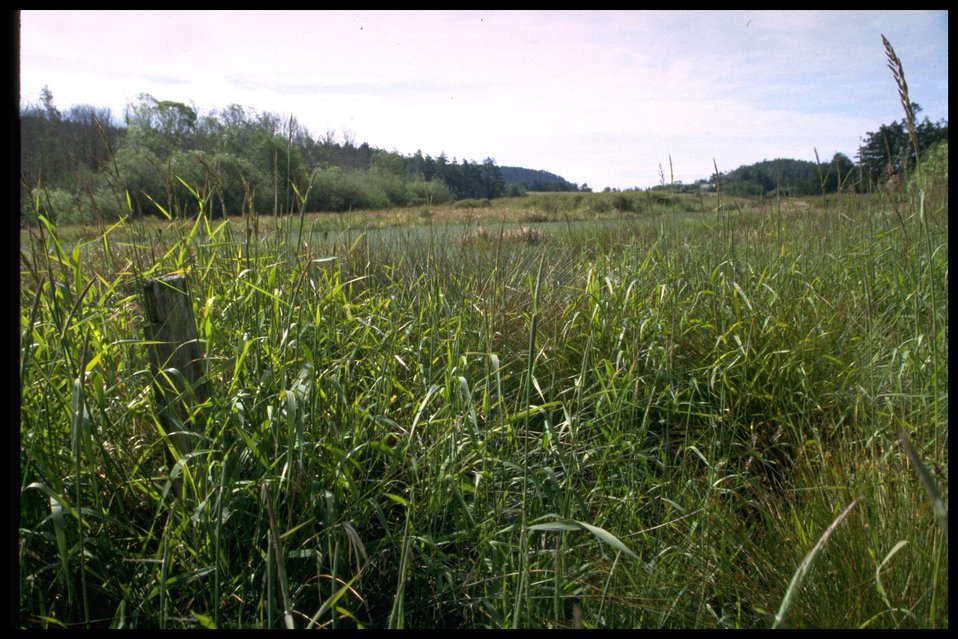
Chadwick Hill Marsh.